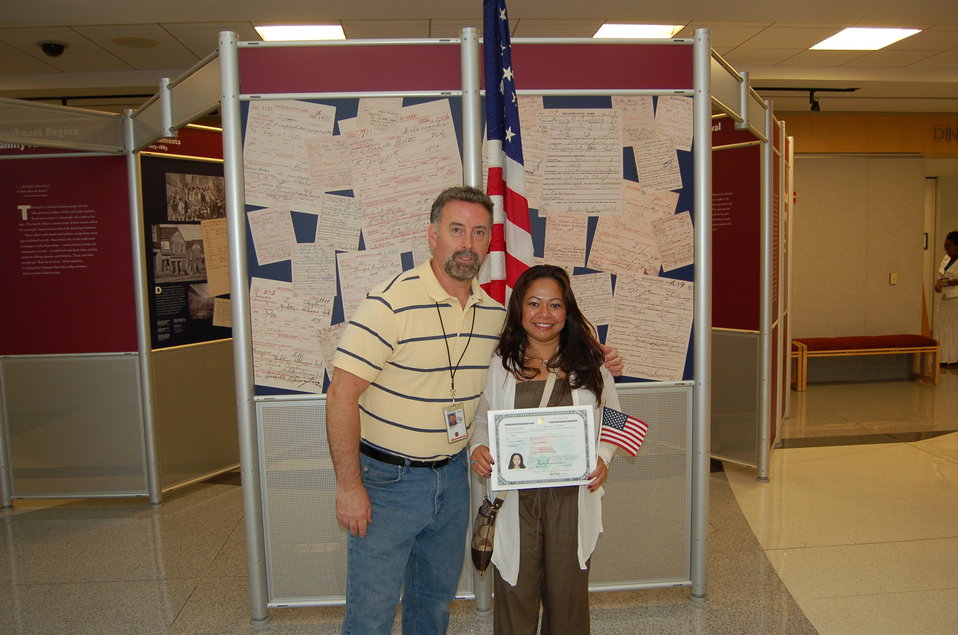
New Citizens